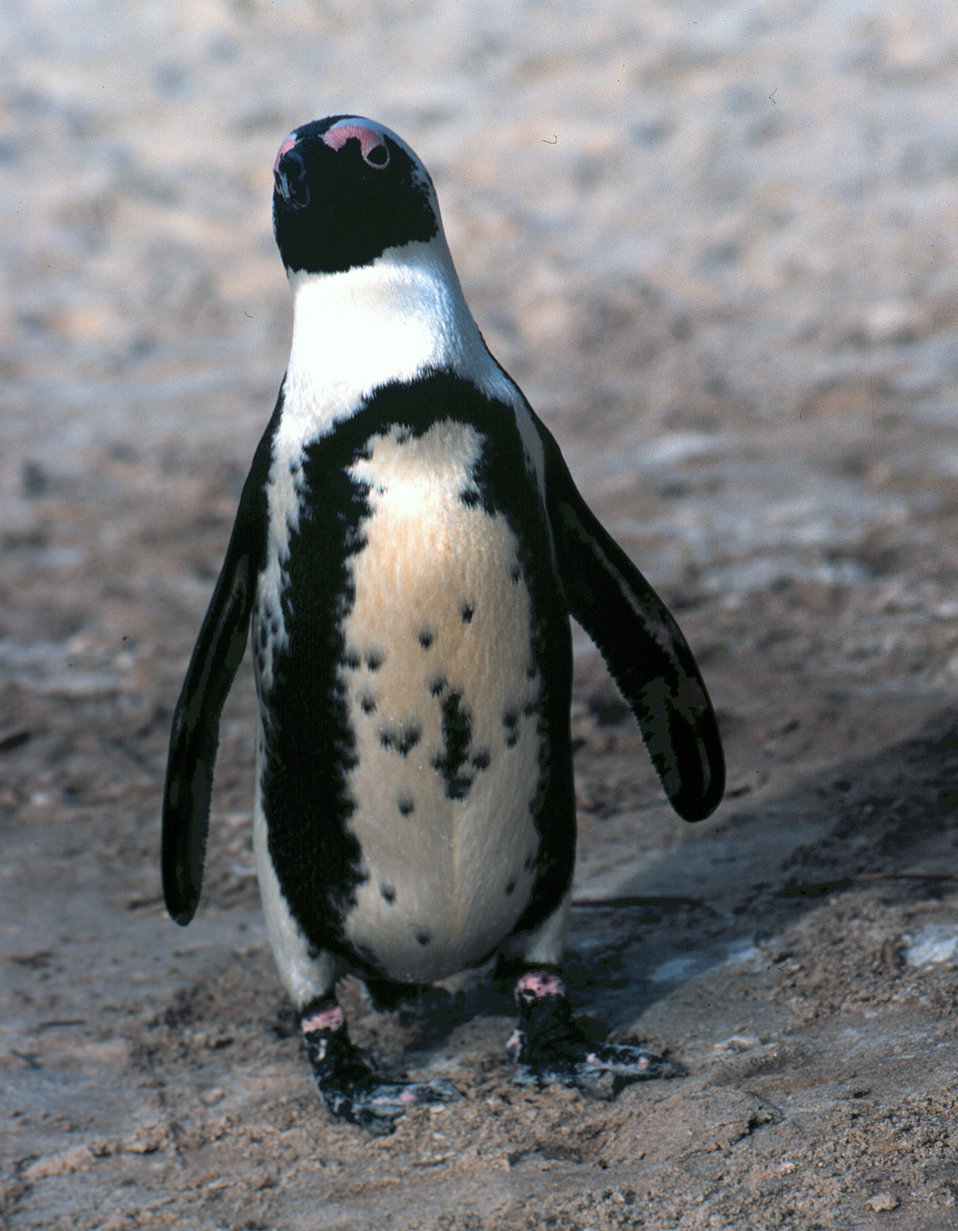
An African penguin